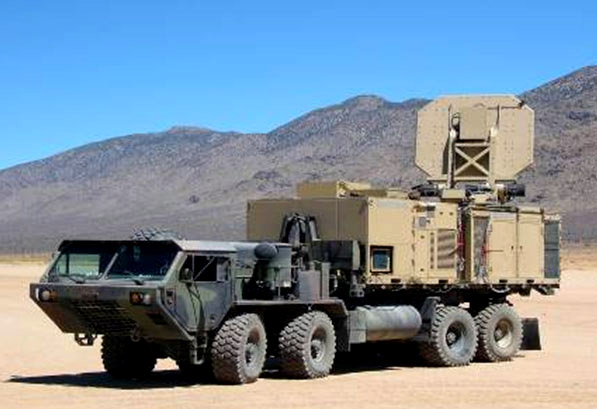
Test results show Active Denial System as nonlethal weapon

An operational version of the Active Denial System is shown. It is an invisible, counter personnel, directed-energy weapon.